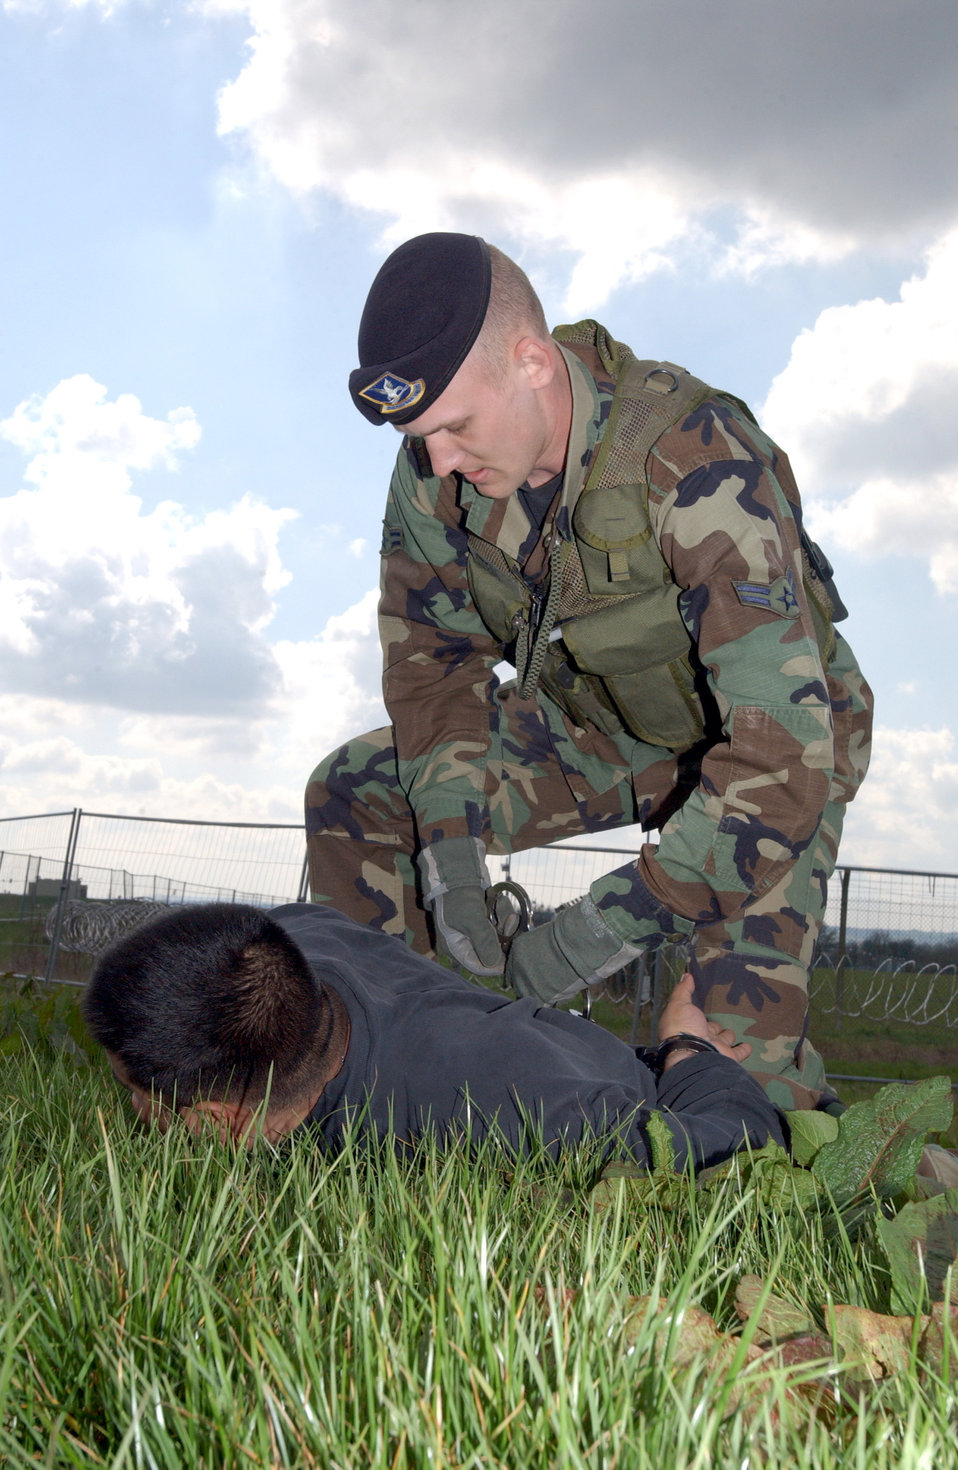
Got ya!

ROYAL AIR FORCE FAIRFORD, England -- Airman 1st Class Mitchell Stein apprehends a